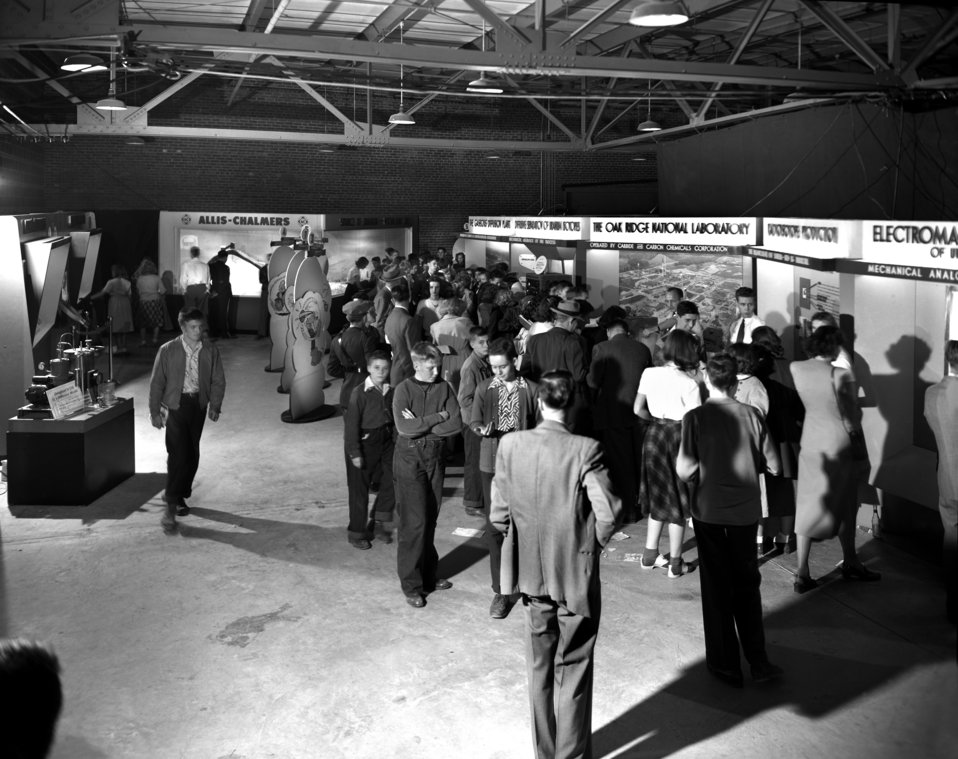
Man and Atom Exhibit Oak Ridge 1948

5274 DOE photo Ed Westcott 10-25-28-1948 Bluiding 1916-T-1 8 x 10 Camera Oak Ridge Tennessee